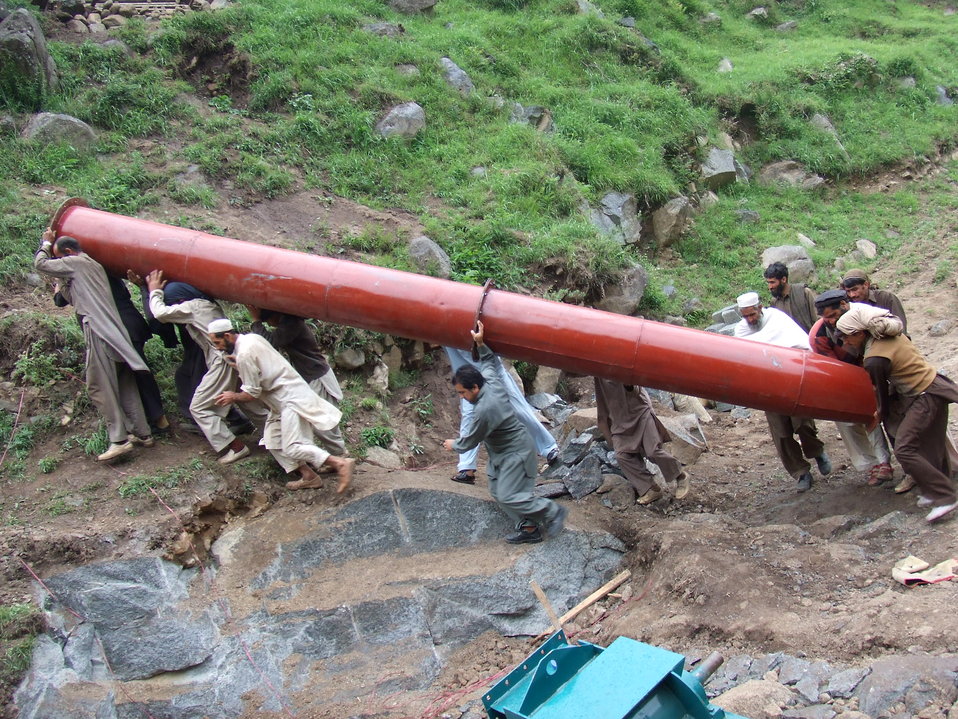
On Location

A new wave of energy has swept a remote village of Matta Tehsil. Children are excited, elders relieved. Electricity had lit their dark houses after over six decades of independence and connected them to the modern world.
“We can now watch cartoons on the TV just like all the other children,” said an excited child during the inauguration of a micro-hydropower station on Saturday.
The community-based power station, which will supply electricity to about 110 households in Swatai village, has been installed with the assistance of Small Grants Ambassador Fund Program of the USAID in collaboration with the Swat Participatory Council (SPC).